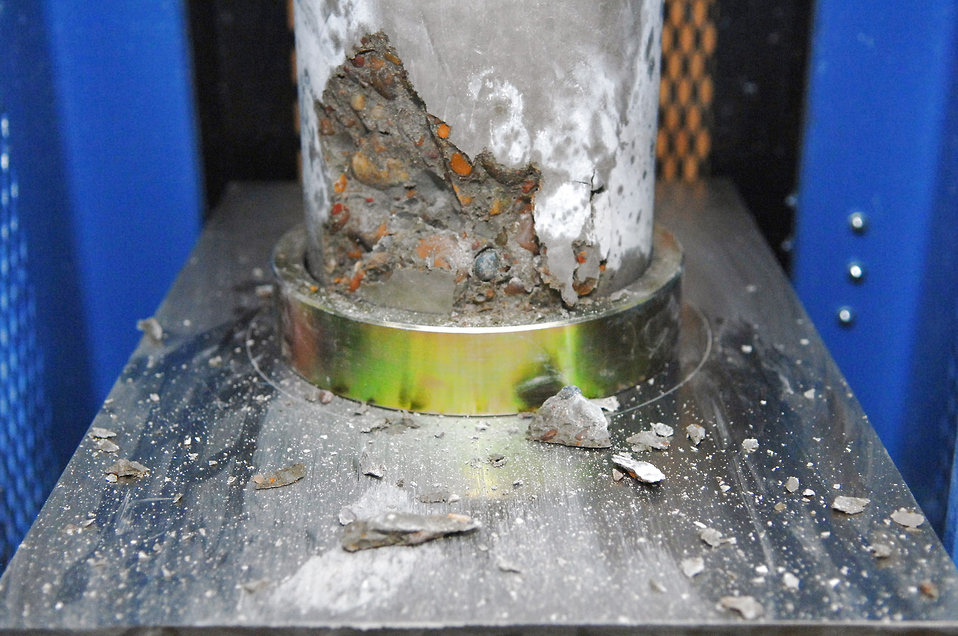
Under pressure

A concrete cylinder sample taken from the new Housing 6 area shoppette foundation broke during the strength test at 5,100 pounds per square inch, which is a passing number Feb. 21 at Balad Air Base, Iraq. These tests confirm aircraft or buildings can be put on concrete surfaces without the concrete cracking or sinking. The minimum number to pass is 4,500 pounds per square inch.